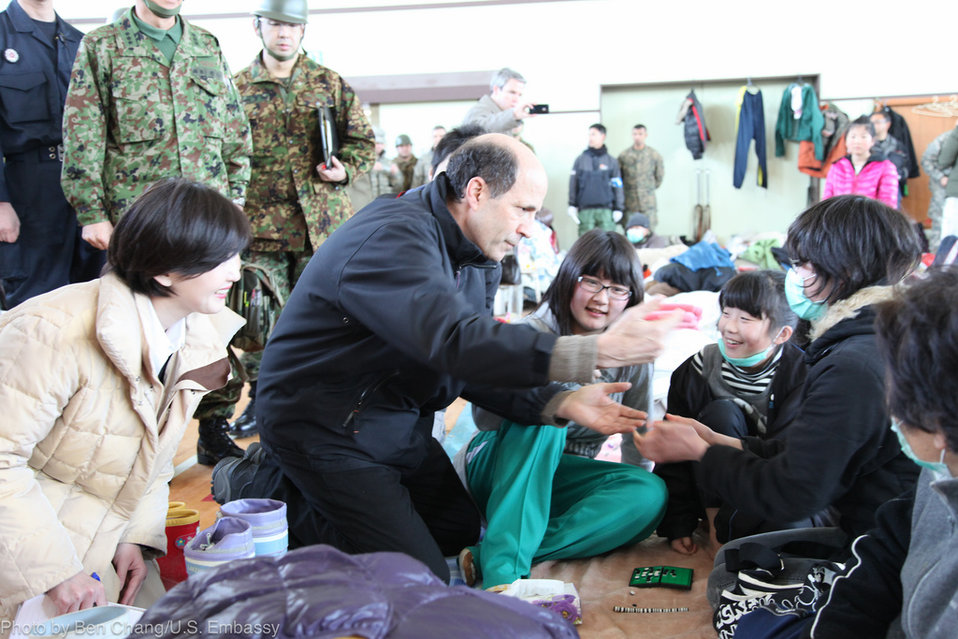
Ambassador Roos Visits Disaster Victims

U.S. Ambassador to Japan John Roos visits disaster victims at an emergency shelter in Ishinomaki, near Sendai, Japan, on March 23, 2011.